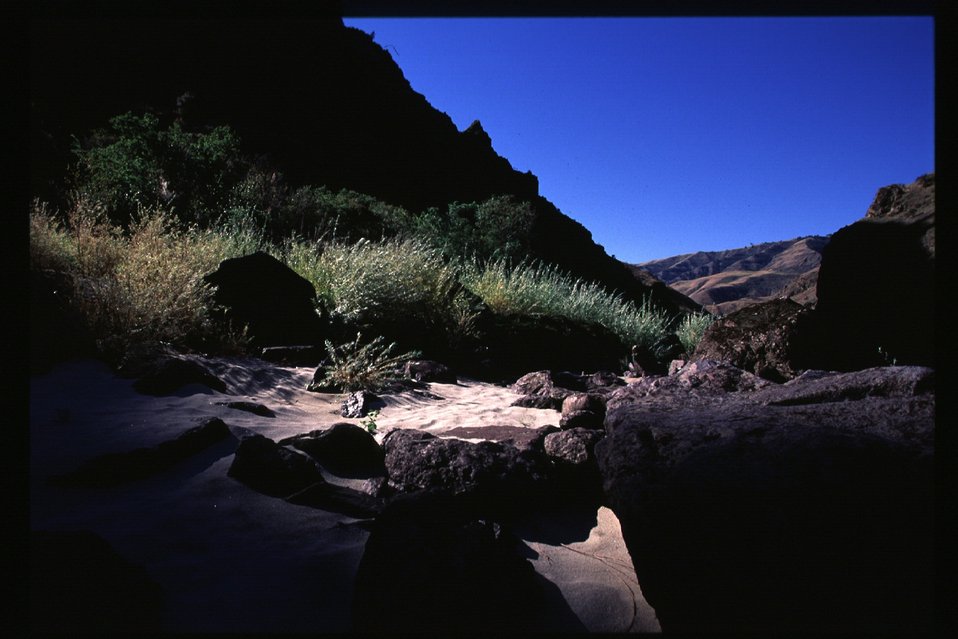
Beach area Lower Salmon River Cottonwood Field Office UCSC Upper Columbia Salmon Clearwater District